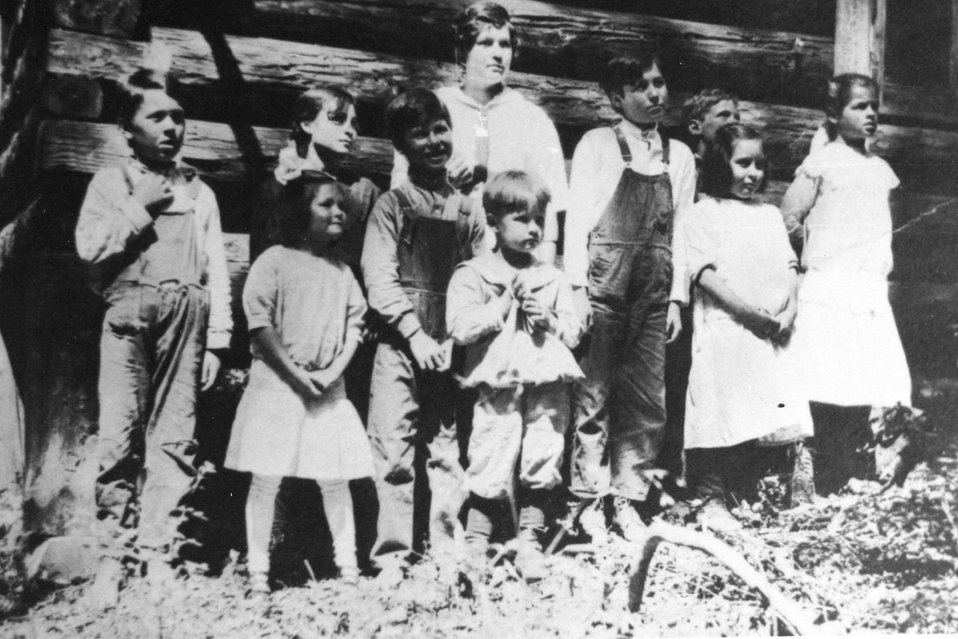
School at Marial C. 1912